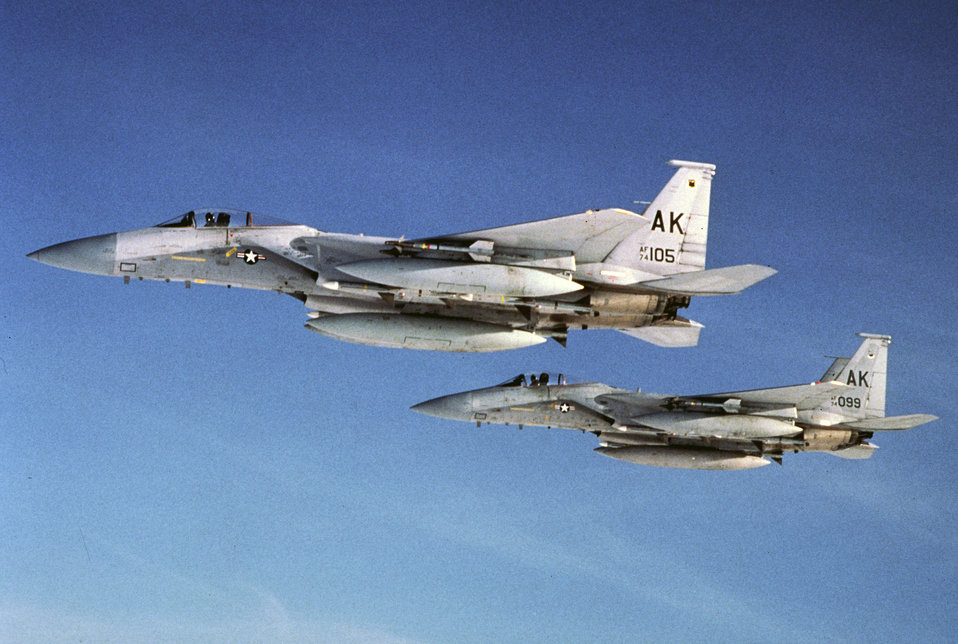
F-15, April 1988